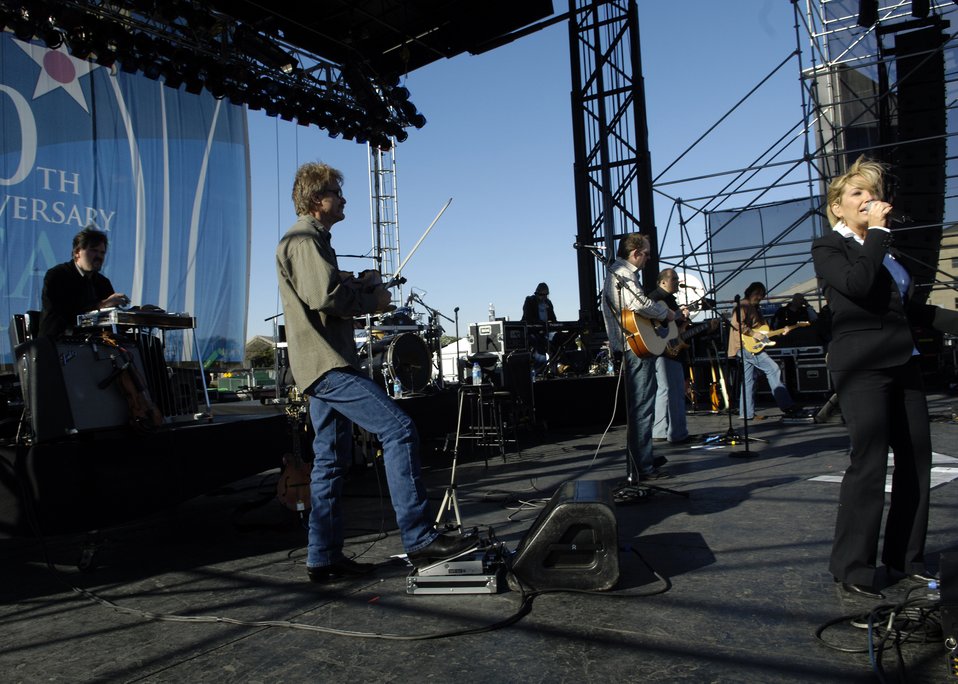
Lee Ann Womack performs

Country music performer Lee Ann Womack performs for more than 25,000 spectators gathered at the Air Force open house at the Pentagon on Saturday, Oct. 14, 2006. The concert followed the official dedication ceremony of the Air Force Memorial.